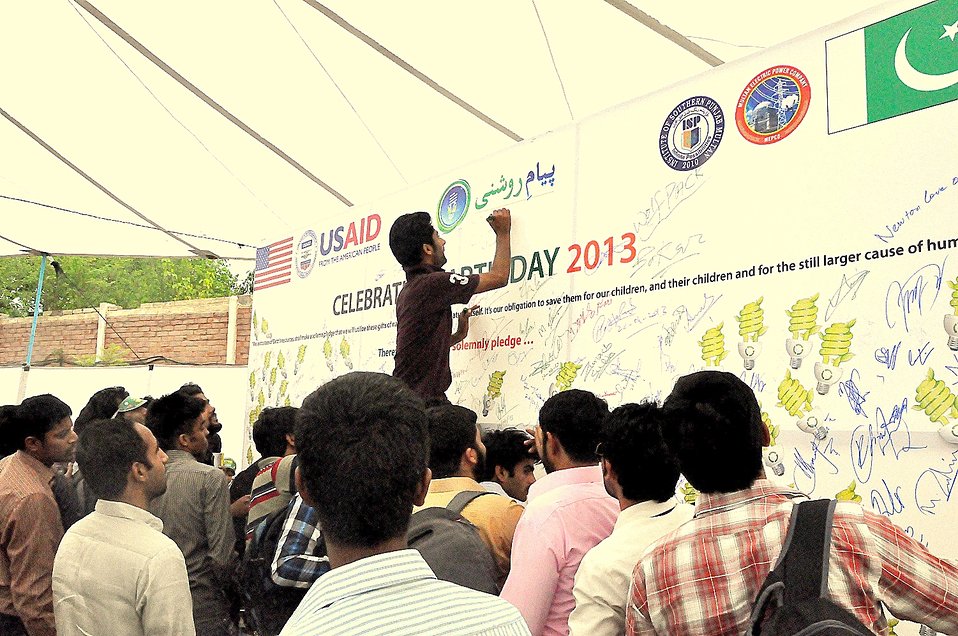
USAID celebrates Earth Day 2013